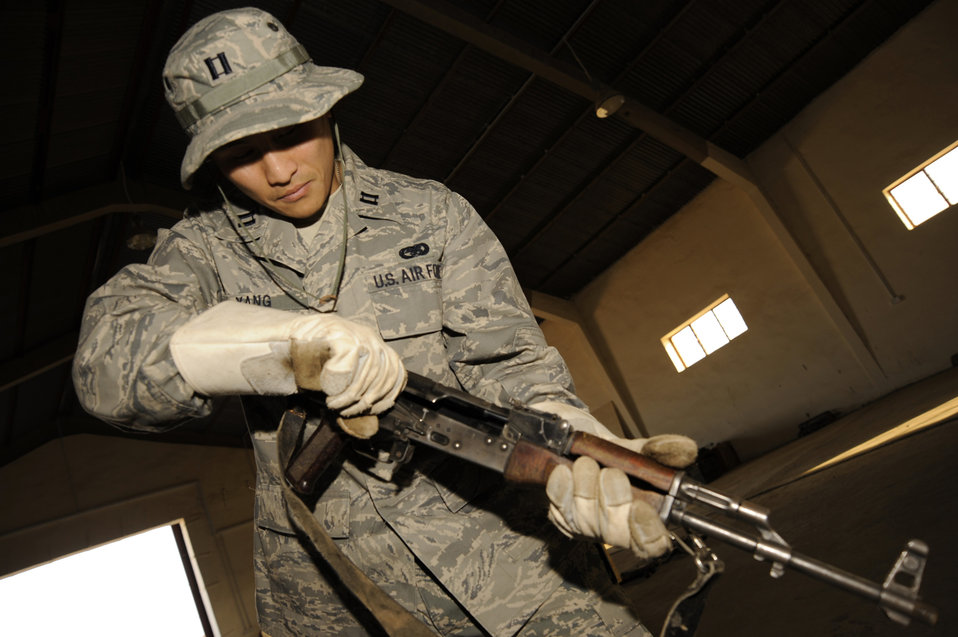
Airman leads team in managing enemy's weapons cache

Capt. Ted Yang ensures an AK-47 rifle is cleared before packing it to be shipped at Taji Military Base, Iraq. Captain Yang is the J4 Taji liaison officer. He is a native of Fresno, Calif., and deployed from Whiteman Air Force Base, Mo.